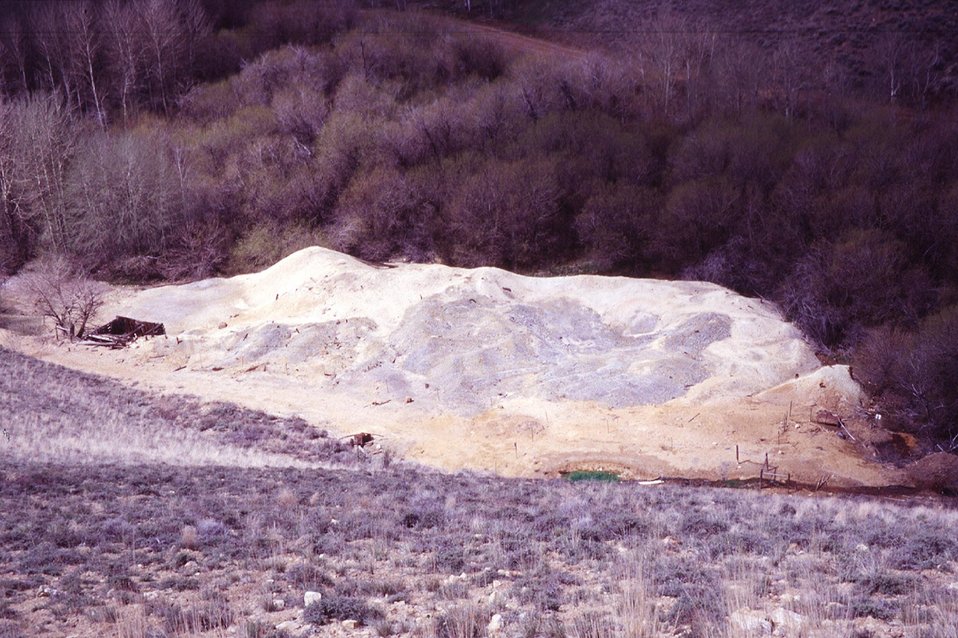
Waste Dump at Moran Tunnel Champagne Creek Southeast Idaho USRD Upper Snake River District